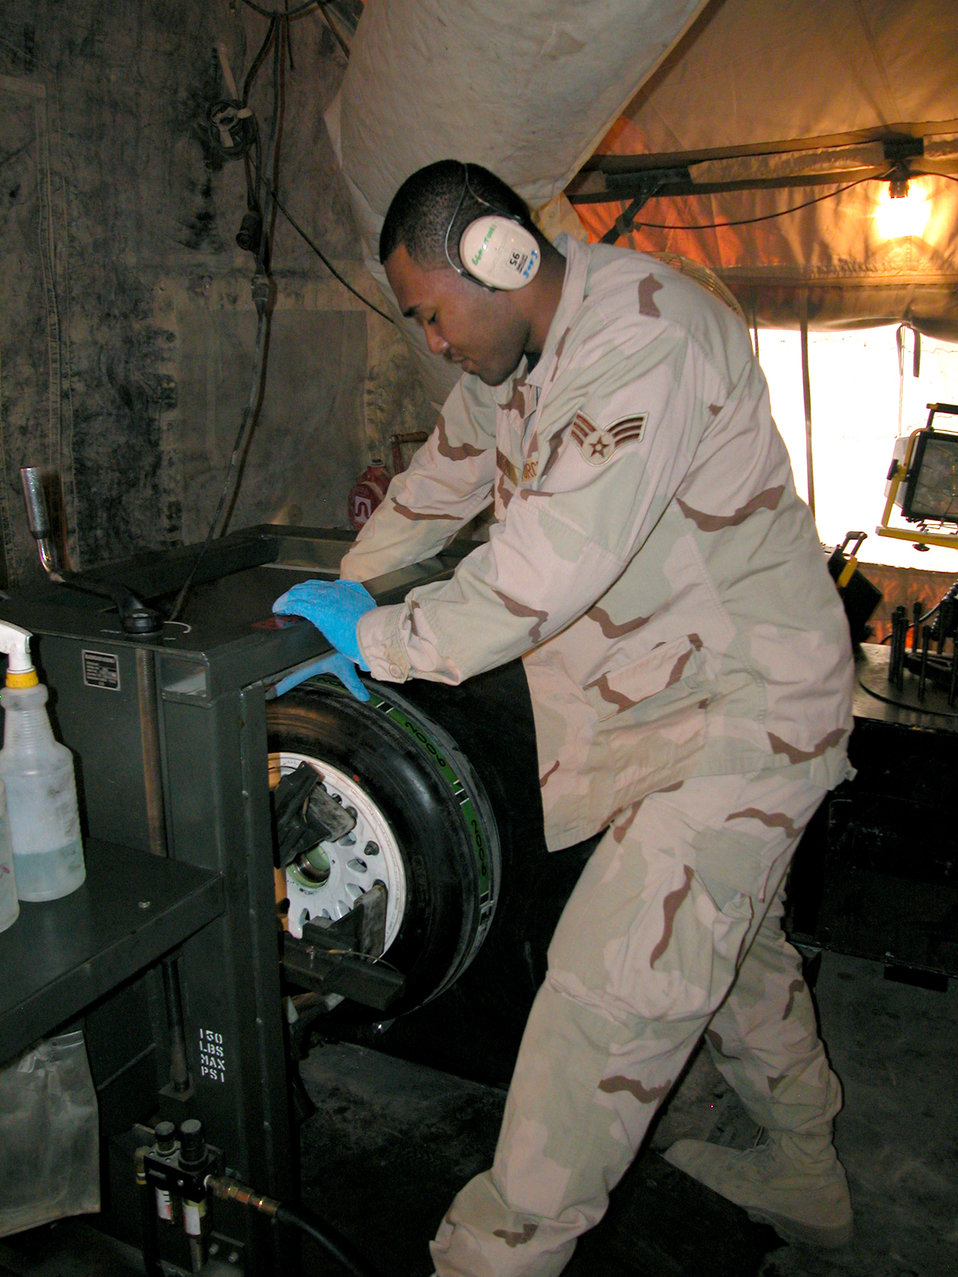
Transient alert maintainers provide critical mission support

Senior Airman Jon McNairy works on an F-16 Fighting Falcon tire in the 332nd Expeditionary Maintenance Squadron's Crash Recovery, Wheel and Tire shop at Balad Air Base, Iraq. Airmen in the shop work on about 30 wheels a week. Airman McNairy is deployed from the 35th Maintenance Squadron, Misawa Air Base, Japan.